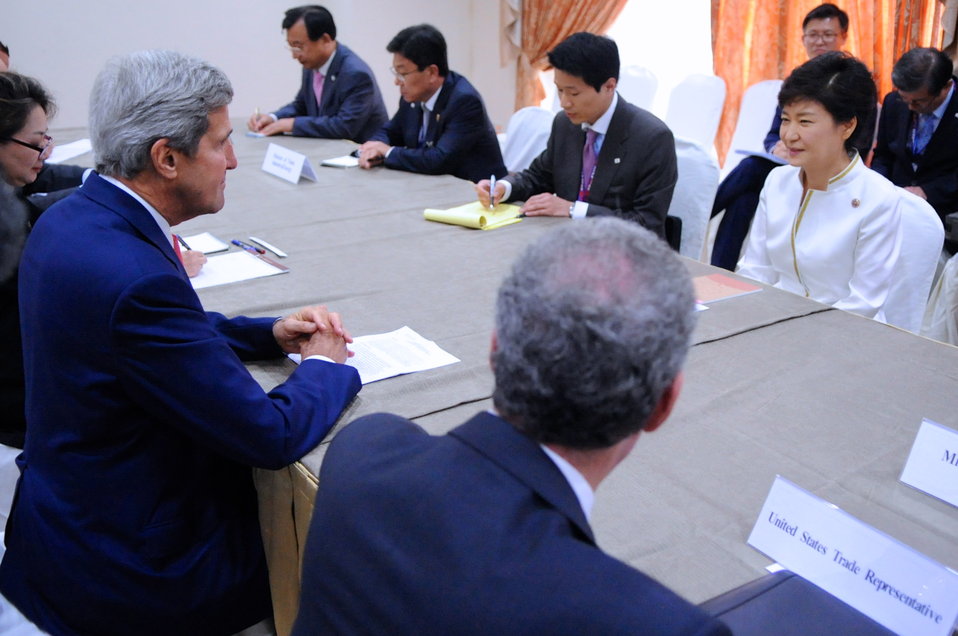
Republic of Korea President Park Speaks With Secretary Kerry

President Park Geun-hye of the Republic of Korea speaks with U.S. Secretary of State John Kerry during a bilateral meeting on the margins of the East Asia Summit in Bandar Seri Begawan, Brunei, on October 10, 2013.